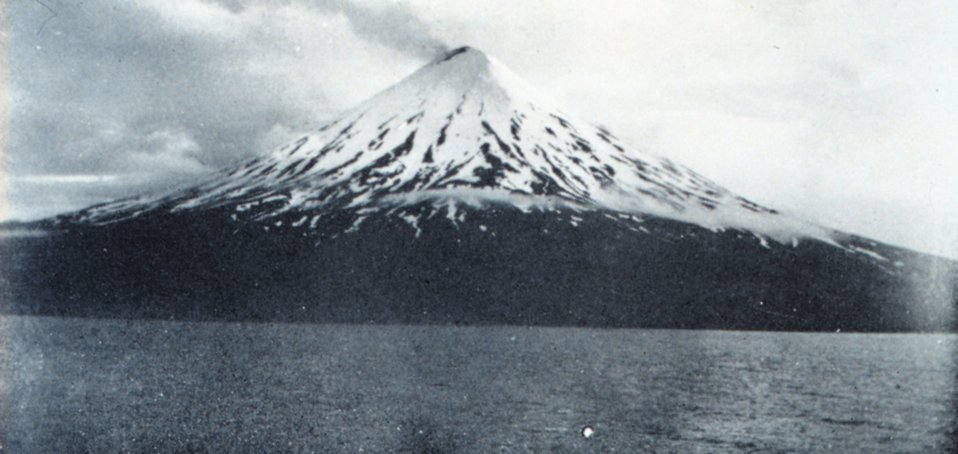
Mt. Cleveland in the Four Mountain Islands